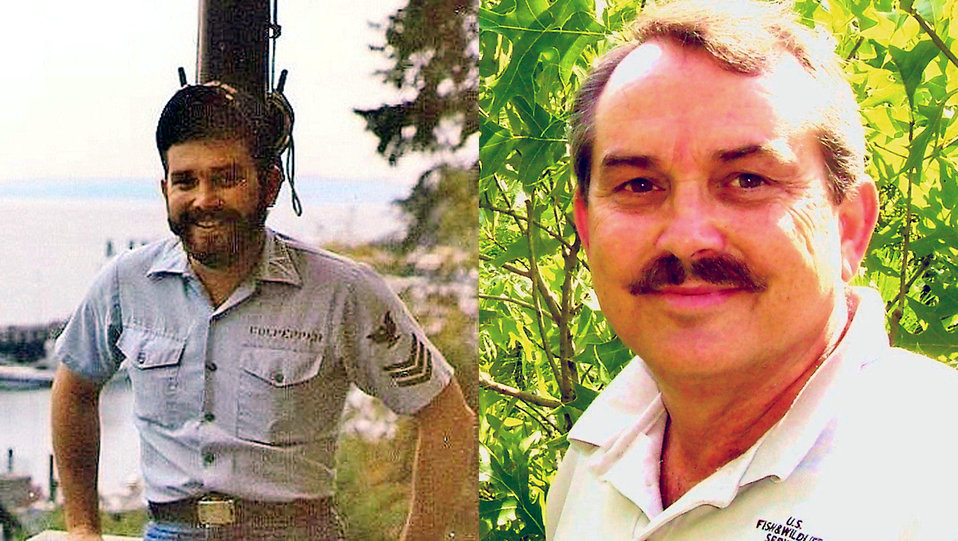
Jack Culpepper.
Jack joined the U.S. Navy in March 1978. He is a plank-owner of the USS Frank Cable (AS 40) which he boarded in Seattle, WA in 1979 and was later home-ported in Charleston, SC in service of Submarine Squadron 4 (SUBRON 4). His primary responsibilities involved maintenance and repair of communications and sonar systems aboard fast-attack submarines. He completed his tour of duty as an Electronics Technician First Class (E-6) in March of 1985 where he served as the electronic-operations supervisor at Harbors Operations Department, Trident Subase Bangor, WA..
He reentered government service with the USFWS in 2003 as a fish and wildlife biologist in Vero Beach FL, and Lafayette, LA in 2005 before assuming his current duties in 2007 as forester at the Carolina Sandhills NWR. .
Culpepper received Navy Letters of Commendation for completing SUBRON 4 mission essential repairs onboard fast-attack submarines, and while serving TAD on the submarine-rescue vessel, USS Petrel (ASR 14).